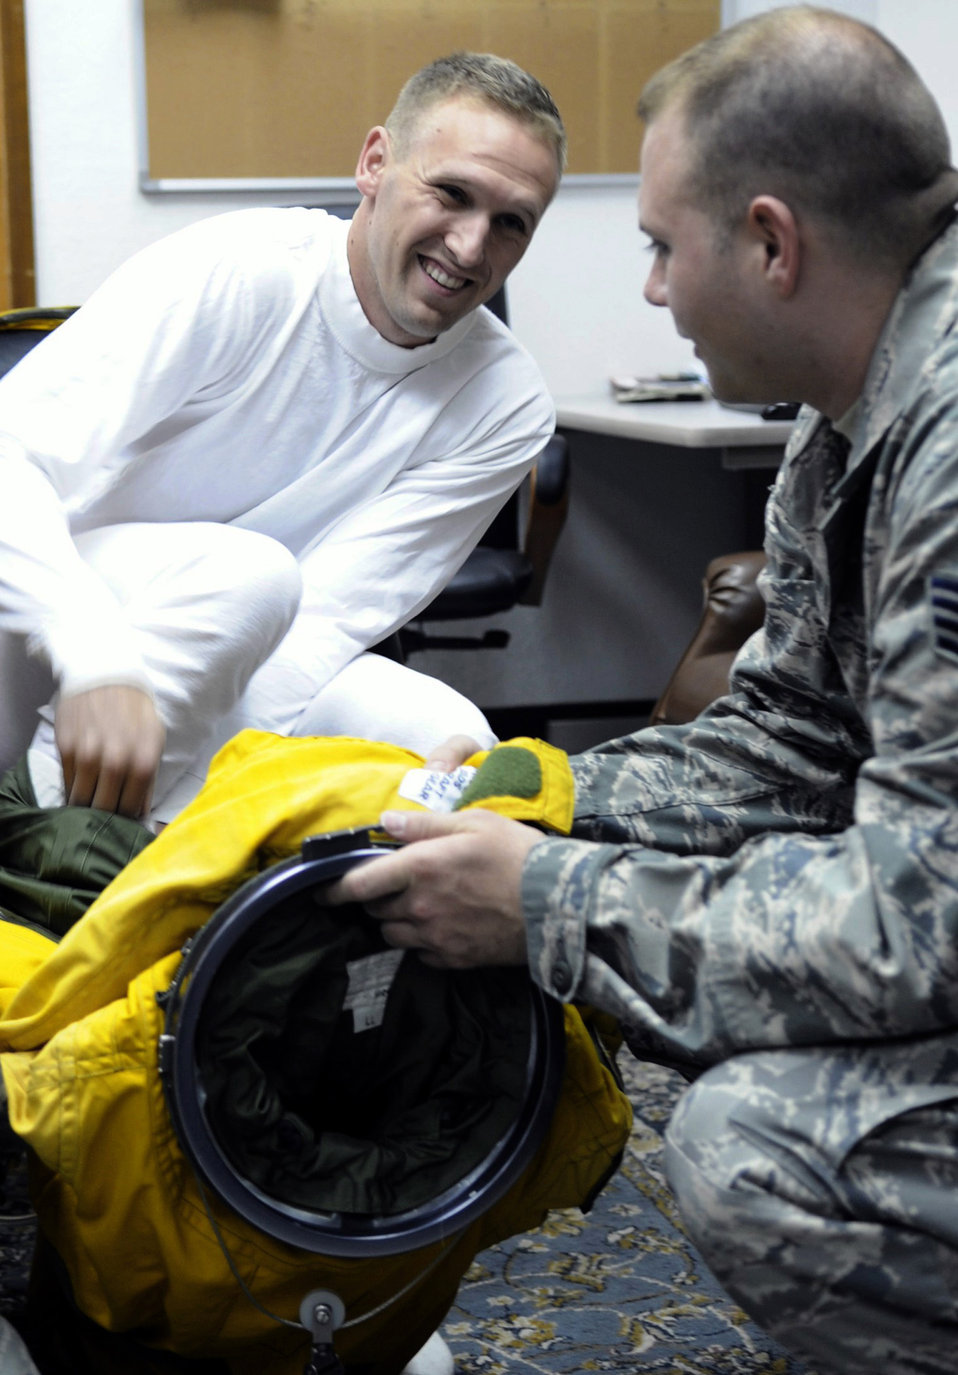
Airmen provide intelligence, surveillance, reconnaissance

Staff Sgt. Mark Reith helps Capt. Peter J. Gryn don his specialized suit before a flight Oct. 4, 2009. The sortie was Captain Gryn's first combat mission. Both Airmen are deployed from Beale Air Force Base, Calif.